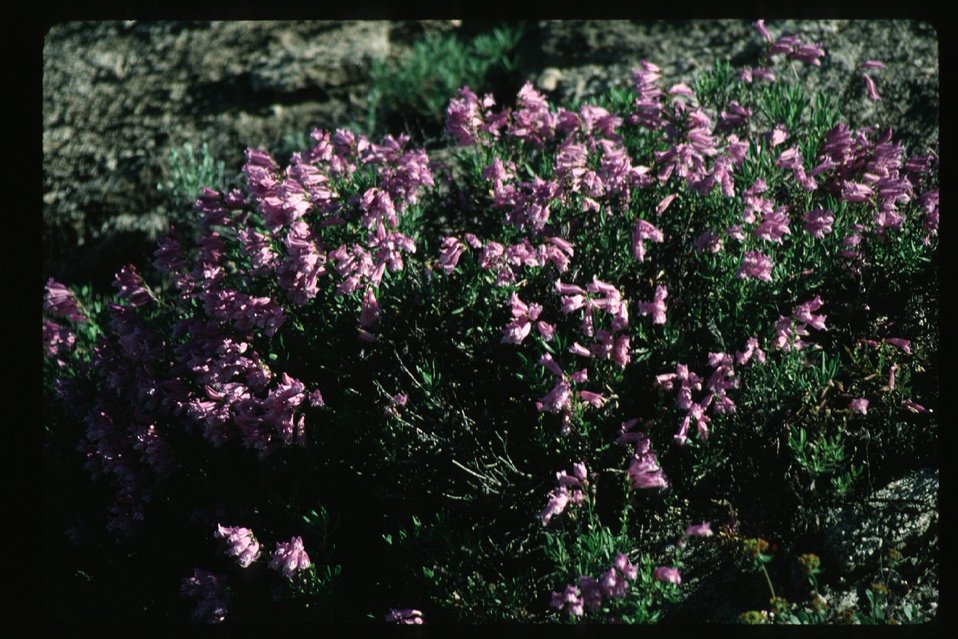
Penstomum Scenic Wildflowers Vegetation Grass and brush USRD Upper Snake River District